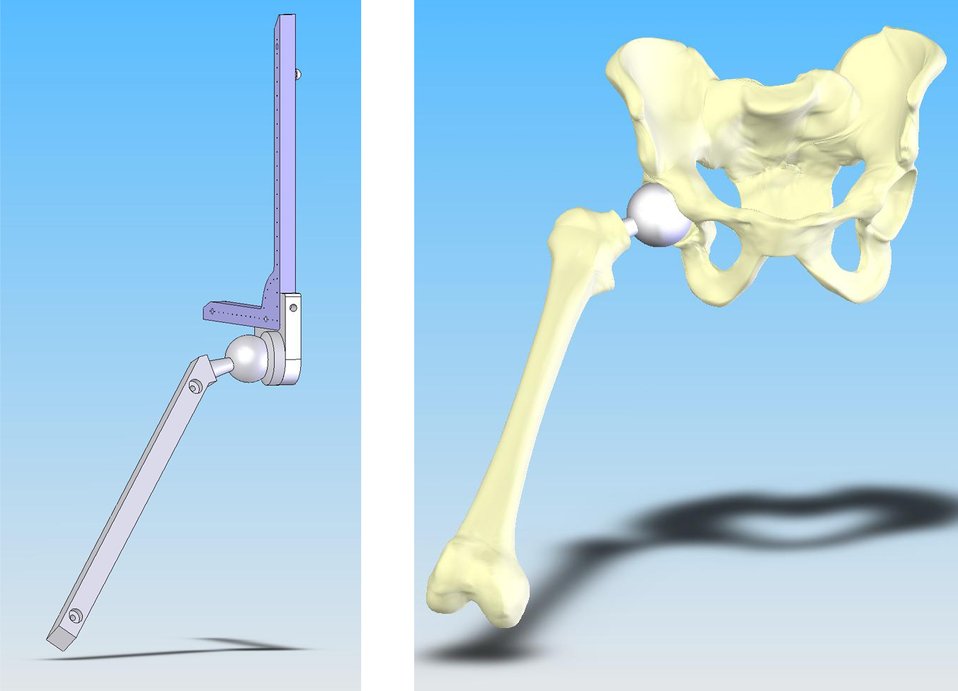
NIST Measuring Device Aims to Up Hip Operation Success

NIST prototype hip replacement 'phantom' (l.) provides a precisely measured coordinate system and magnetic ball and socket joint to calibrate and to measure the clinically relevant performance of Computer Assisted Orthopaedic Surgery (CAOS) tracking instruments used in delicate operations to install artificial hip joints (r.).